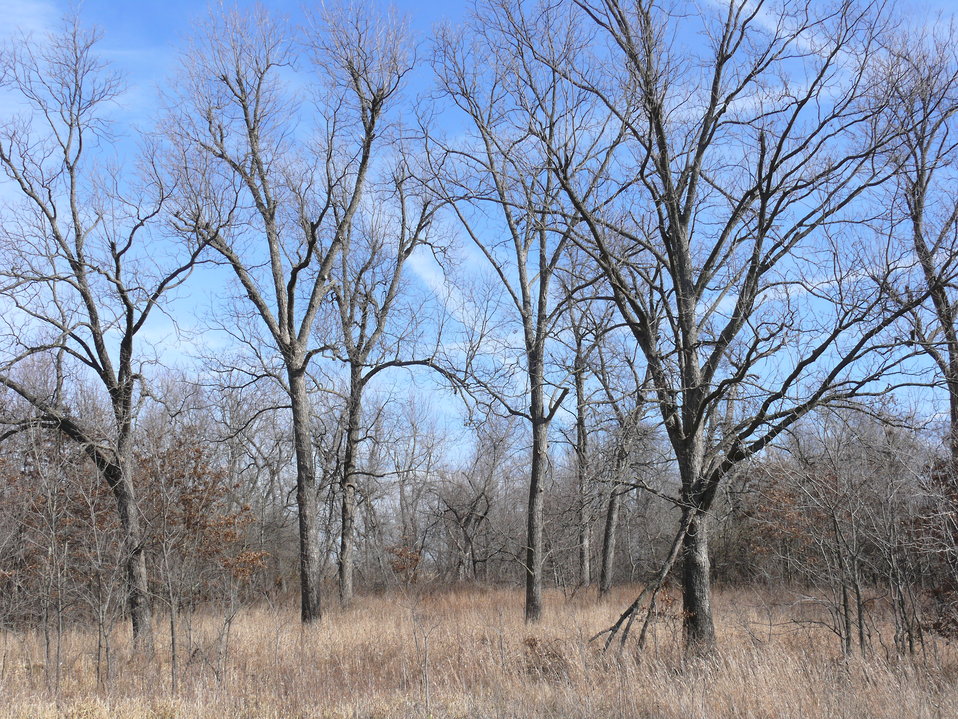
Acquired Acreage in Cherokee County, Kansas

This forested area in Cherokee County, Kansas, is part of newly acquired acreage which will provide habitat for grassland and other species of migratory birds, aquatic habitat for waterfowl and other aquatic species. The restoration acquisition was made possible through the combined efforts of the US Fish and Wildlife Service, Kansas Department of Health and Environment and Kansas Department of Wildlife, Parks and Tourism.